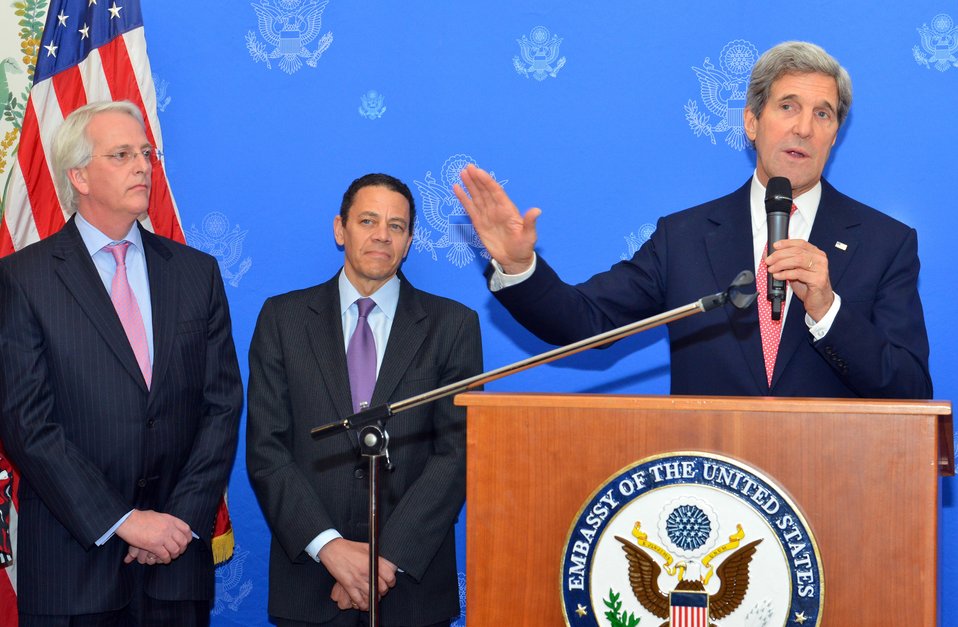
Secretary Kerry Addresses the Tri-Mission Staff and Families

Flanked by U.S. Ambassador to NATO Ivo Daalder, left, and U.S. Ambassador to the European Union William Kennard, center, U.S. Secretary of State John Kerry addresses the staff and families of Tri-Mission Brussels at the U.S. ambassador's residence on April 22, 2013.